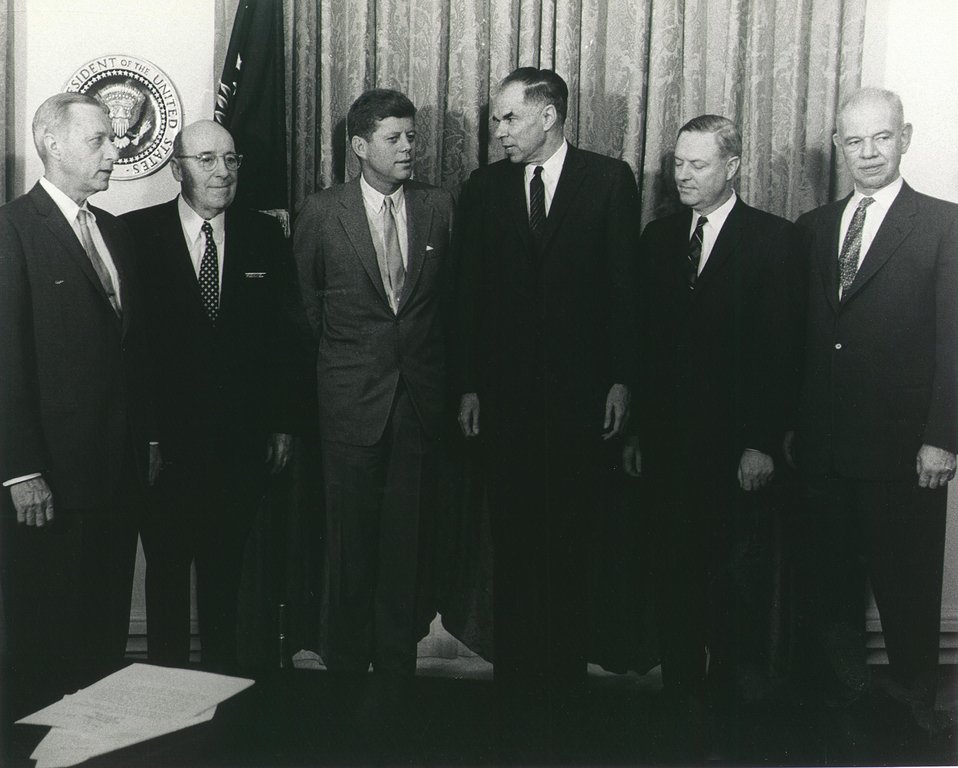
Fermi Award Ceremony for Teller in 1962.